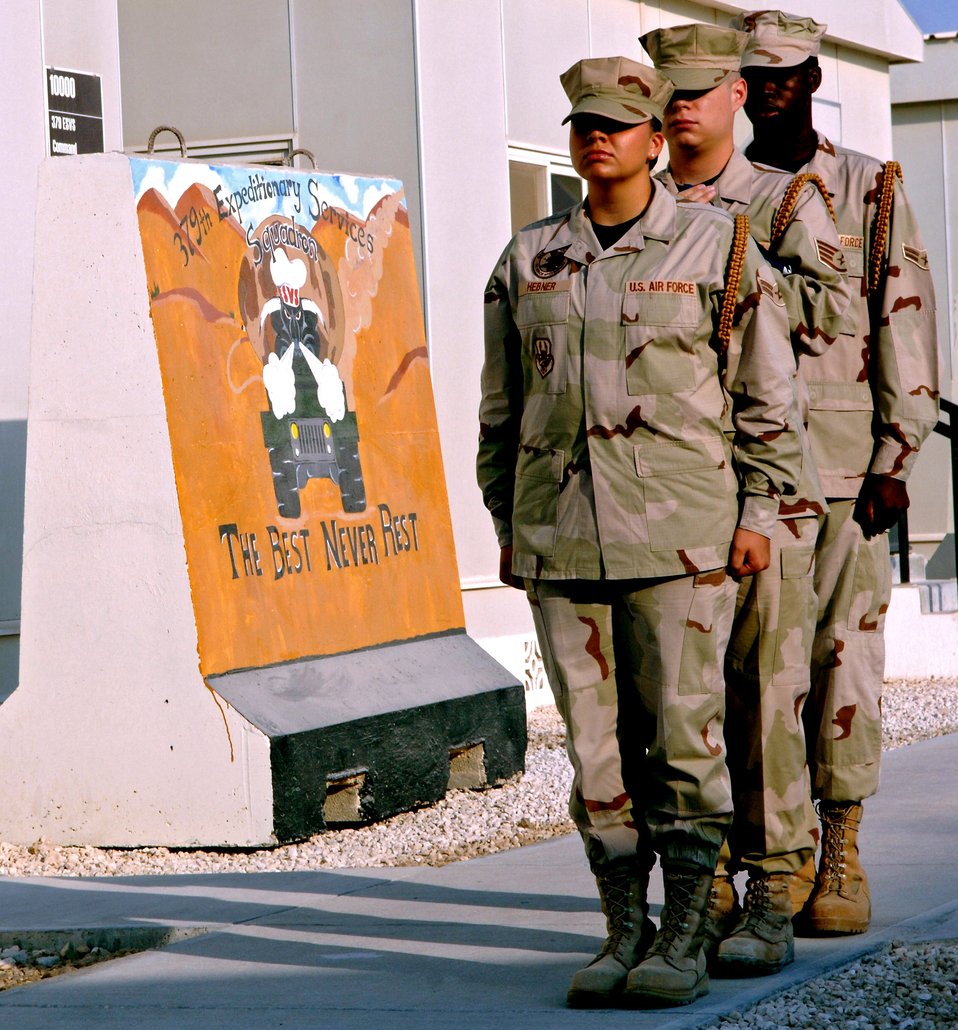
379th AEW Airmen pay tribute to Air Force's 60th birthday

Airman 1st Class Evon Hebner (front), Staff Sgt. Christopher McDonald (center) and Airman 1st Class Miguel Leon prepare for a reveille ceremony in honor of the Air Force 60th birthday Sept. 18 in Southwest Asia. The 379th Air Expeditionary Wing began a week-long celebration Sept. 12 that included fitness-related events and specials at Army and Air Force Exchange concessionaires. The Airmen are with the 379th AEW Honor Guard.